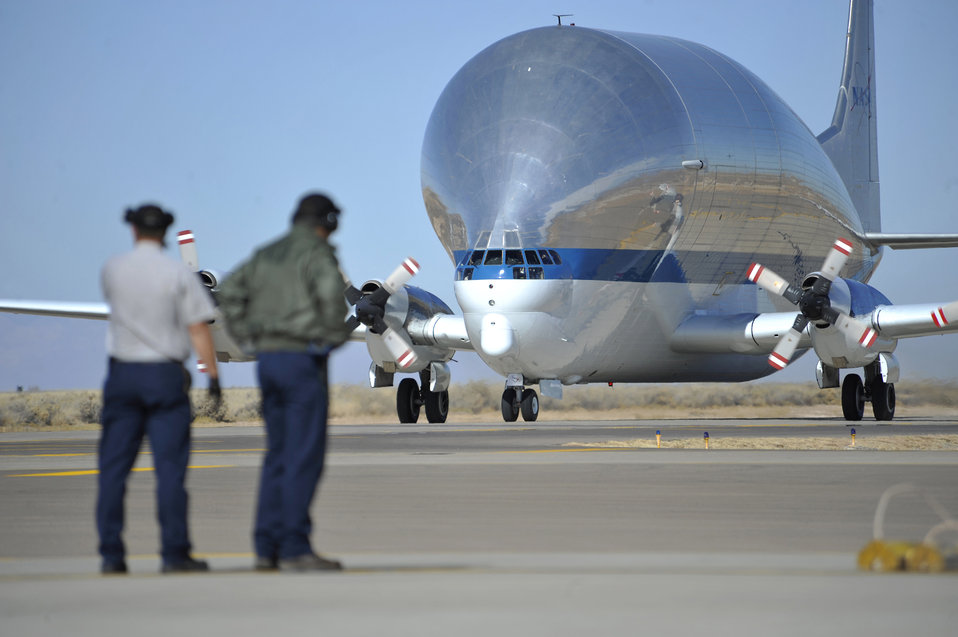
Holloman Airmen provide 5th generation fighter support

A NASA Super Guppy aircraft taxies Dec. 14, 2010, after landing at Holloman Air Force Base, N.M. The aircraft were transported here using NASA's Super Guppy aircraft and are the first two of 15 to be shipped here. The aircraft were used by South Korea for training and will now be regenerated and used as fifth generation fighter support. Holloman AFB officials will regenerate the T-38s before they are sent to Joint Base Langley-Eustis, Va. and Tyndall AFB, Fla.